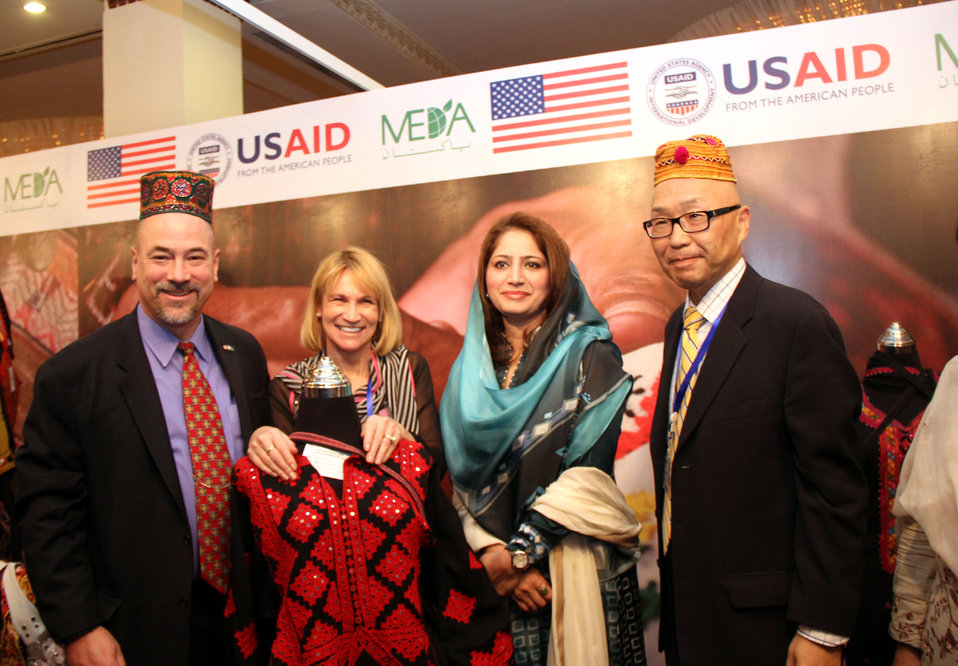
USAID’s Entrepreneurs Project

Ms. Rubina Sadaat Qaimkhani, Minister for Women Development and USAID Deputy Mission Director, Sindh visiting a stall at Pakistan Hand Embellished Fabrics Industry Conference organized by USAID’s Entrepreneurs Project.